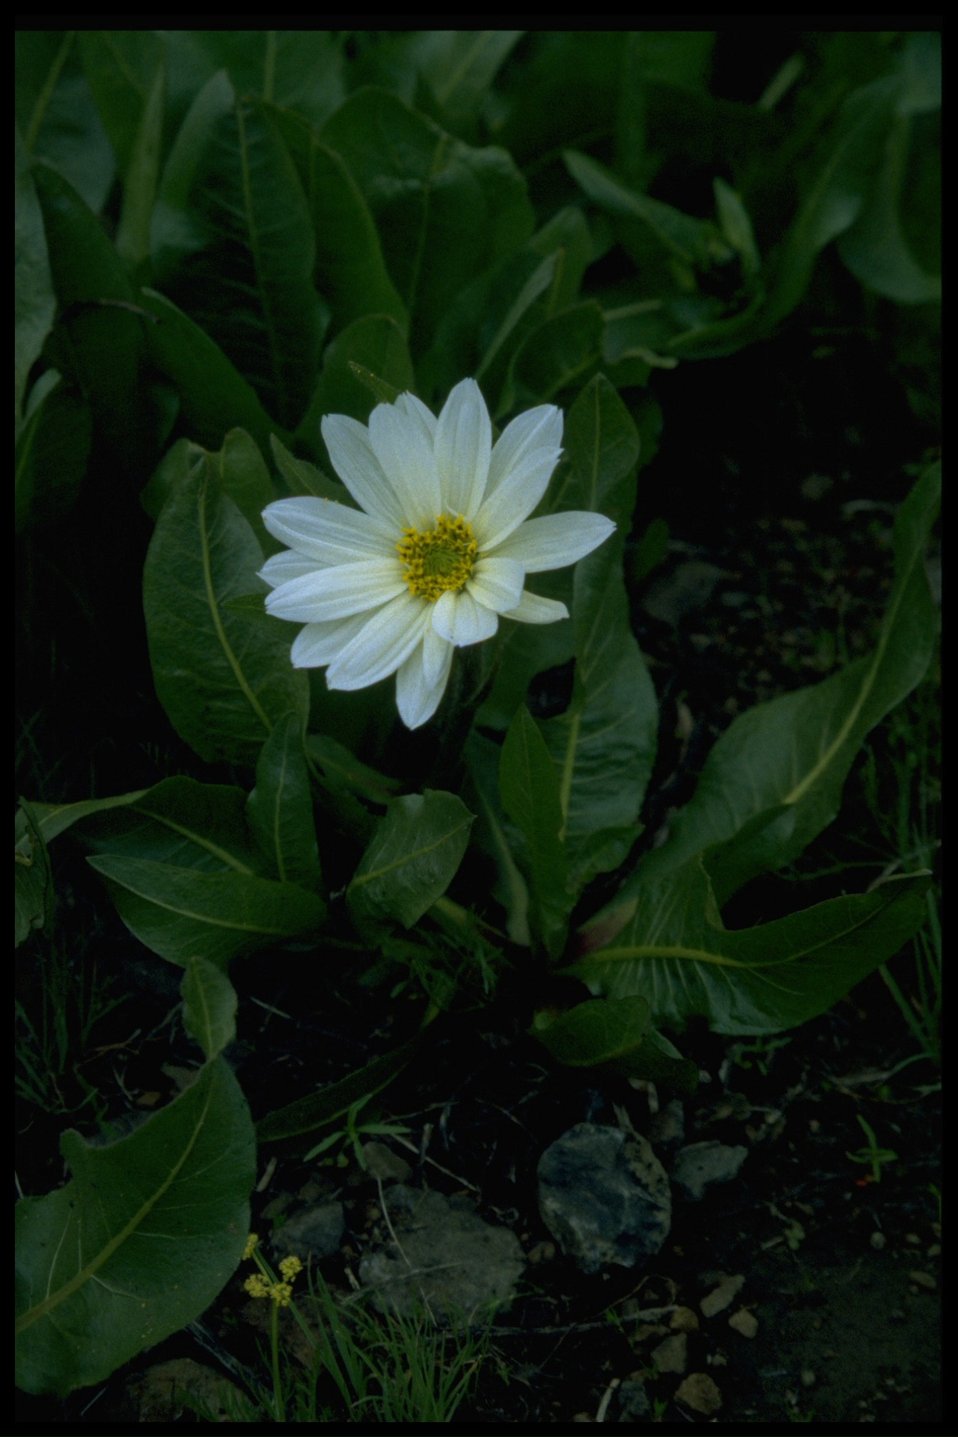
Closeup shot of white-rayed mule's ears (Wyethia helianthoides).